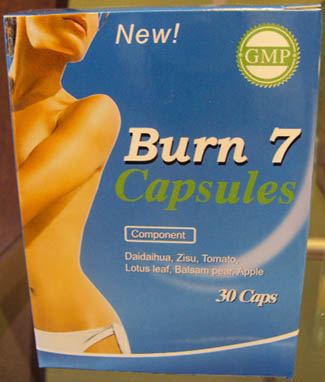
RECALLED – Dietary Supplement

December 23, 2013 – Product Recall – Deseo Rebajar Inc. Issues Voluntary Recall of Burn 7 Capsules Due to Undeclared Active Ingredient. For additional information, please refer to the company issued press release available on FDA’s web site at www.fda.gov/Safety/Recalls/UCM379811.

And read this Consumer Update: Beware of Fraudulent ‘Dietary Supplements’